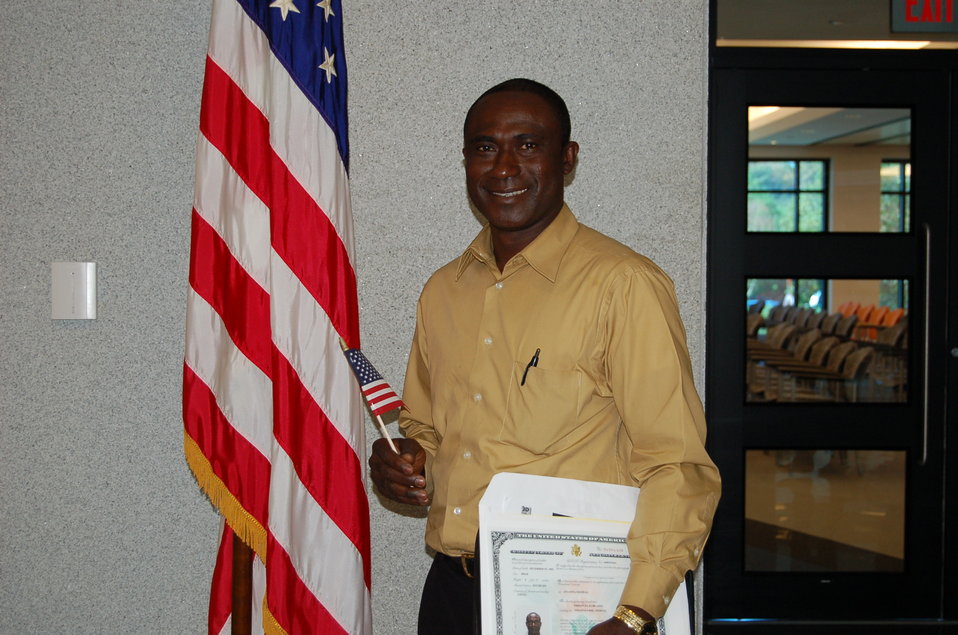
New Citizens